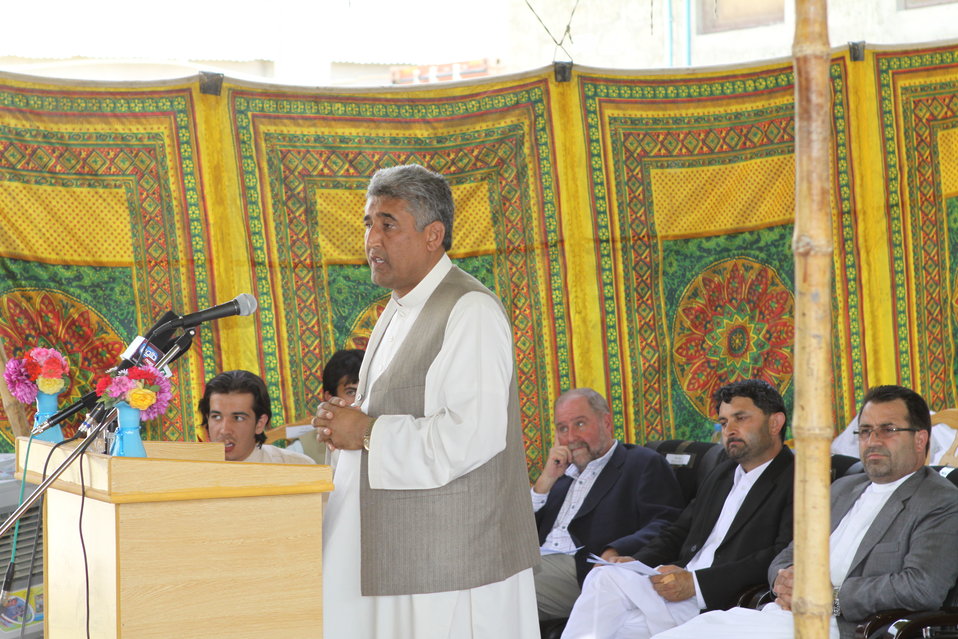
Bolan Poultry Farm